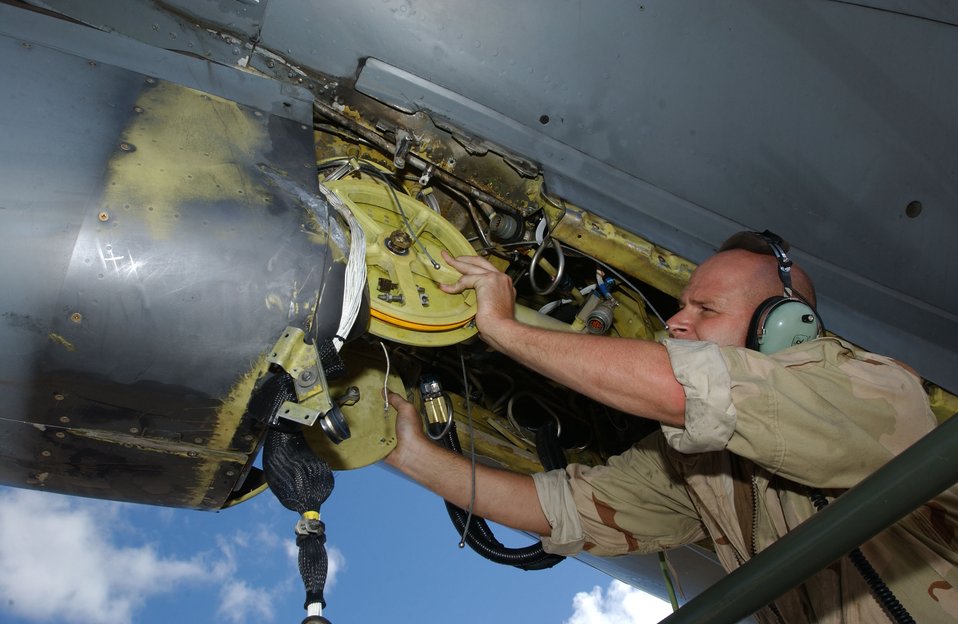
Swappin' out booms

OPERATION ENDURING FREEDOM -- Staff Sgt. Robert Prier changes out a KC-135 Stratotanker boom used to move fuel from the tanker during aerial refueling missions. He is a crew chief with the 28th Expeditionary Air Refueling Squadron at a forward-deployed location and is from MacDill Air Force Base, Fla.